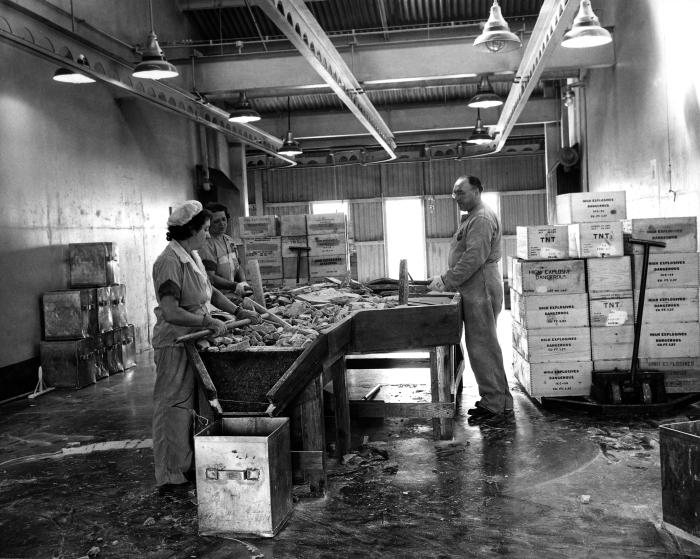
This photograph, provided by the Center for Disease Control's (CDC), National Institute for Occupational Safety and Health (NIOSH), depicted a Public Health Service (PHS) officer (Rt) observing the working process being conducted by two female military TNT (trinitrotoluene) ordnance factory employees stationed at an ore machine. A poisonous chemical, TNT will irritate the skin upon contact, and actually will change the skin's color to a bright yellow-orange. Prolonged exposure leads to liver damage, anemia, enlargement of the spleen, and a compromised immune system, to name a few of its negative effects. Trinitrotoluene is also a known carcinogen. Neither woman, nor the officer were wearing any protective filtered breathing masks, but were wearing gloves. The officer was wearing what appeared to be protective eyewear.